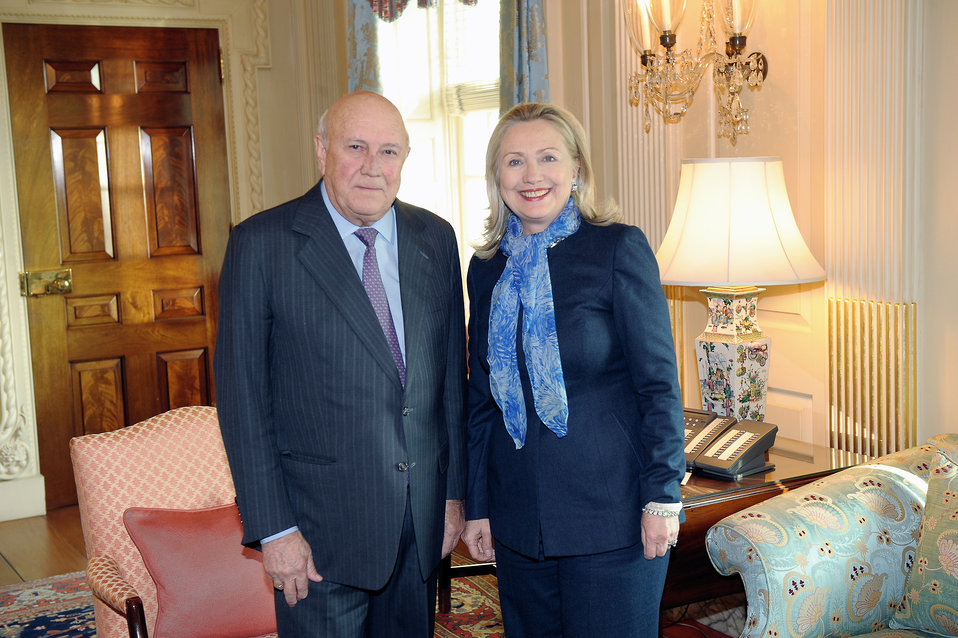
Secretary Clinton Meets With Former South African President F.W. de Klerk

U.S. Secretary of State Hillary Rodham Clinton meets with F.W. de Klerk, former President of the Republic of South Africa, at the U.S. Department of State in Washington, D.C., on March 6, 2012.